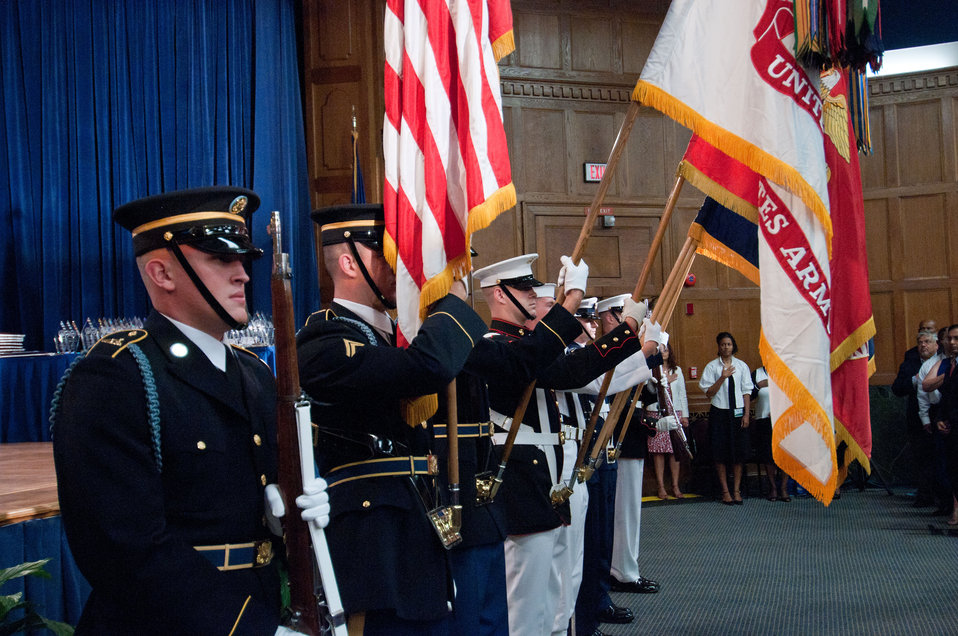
United States Department of Agriculture 63rd Secretary’s Annual Honor Awards held in the Thomas Jefferson Memorial Auditorium in Washington, D.C. on Wednesday, September 14, 2011. The Armed Forces Color Guard presented the colors and the “National Anthem.” Deputy Assistant Secretary for Administration Oscar Gonzales led the Pledge of Allegiance. Deputy Secretary of Agriculture Kathleen Merrigan provided opening remarks and introduction of Agriculture Secretary Thomas J. Vilsack.